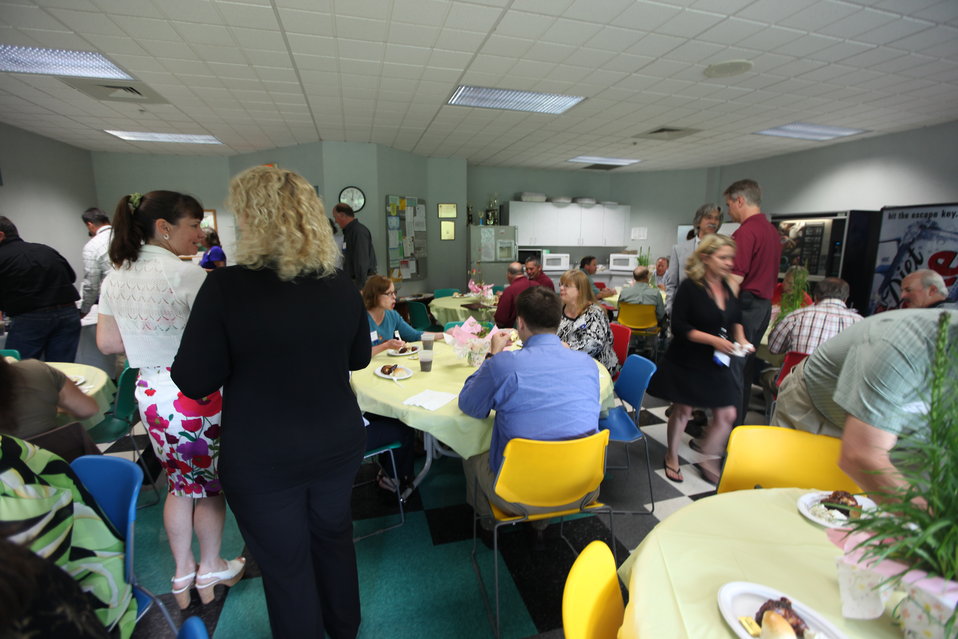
Northeast Region Employee Appreciation Awards

Luncheon.